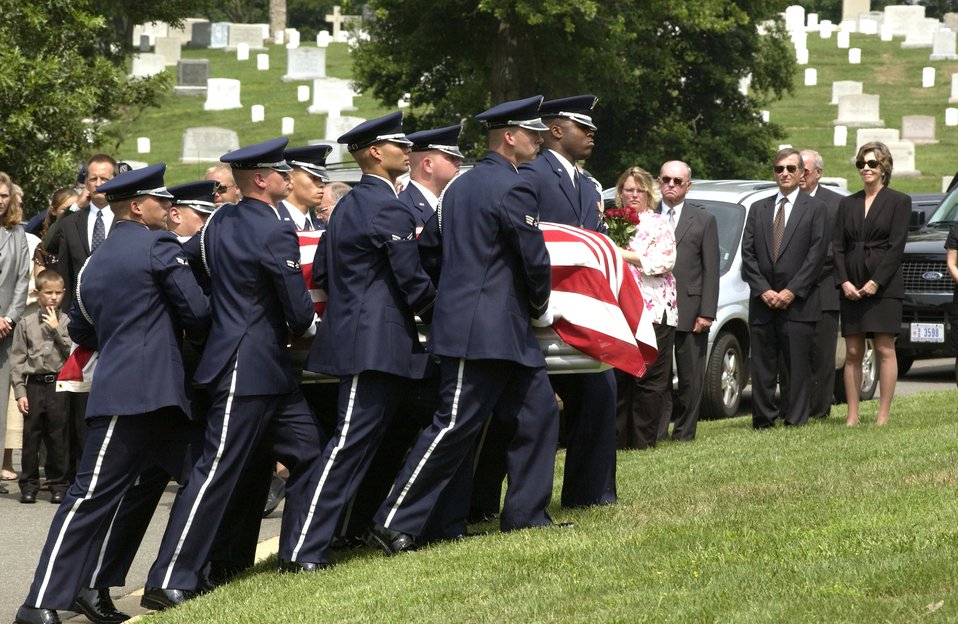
Late space, missile pioneer receives full military honors

ARLINGTON, Va. -- Air Force Honor Guard pallbearers carry the coffin of retired Gen. Bernard Adolph Schriever to his burial site July 12 at Arlington National Cemetery.